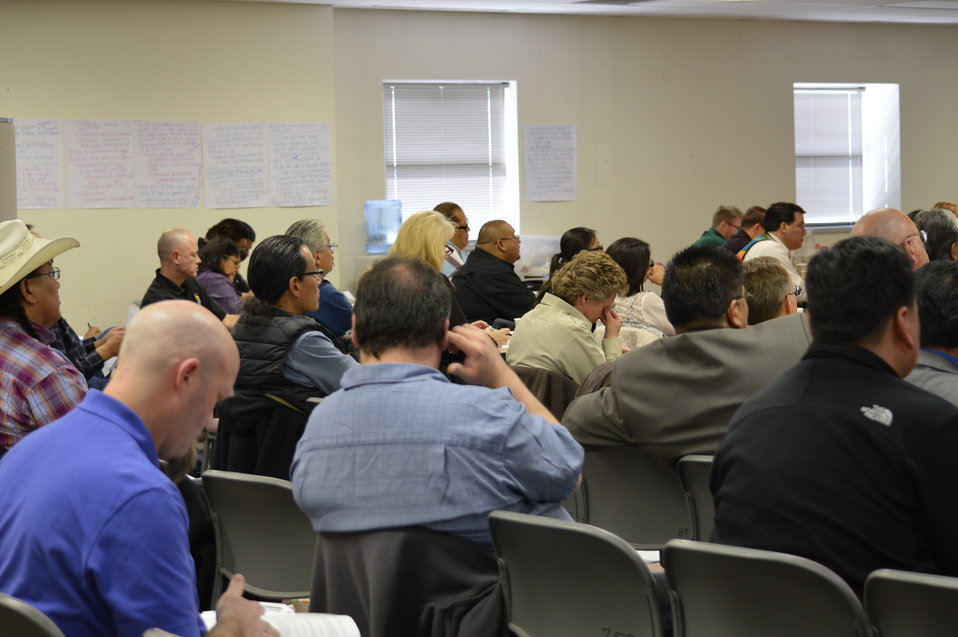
Eagle Summit III

Attendees of the Eagle Summit III in Denver, Colorado on March 20, 2014 at the Rocky Mountain Arsenal National Wildlife Refuge.